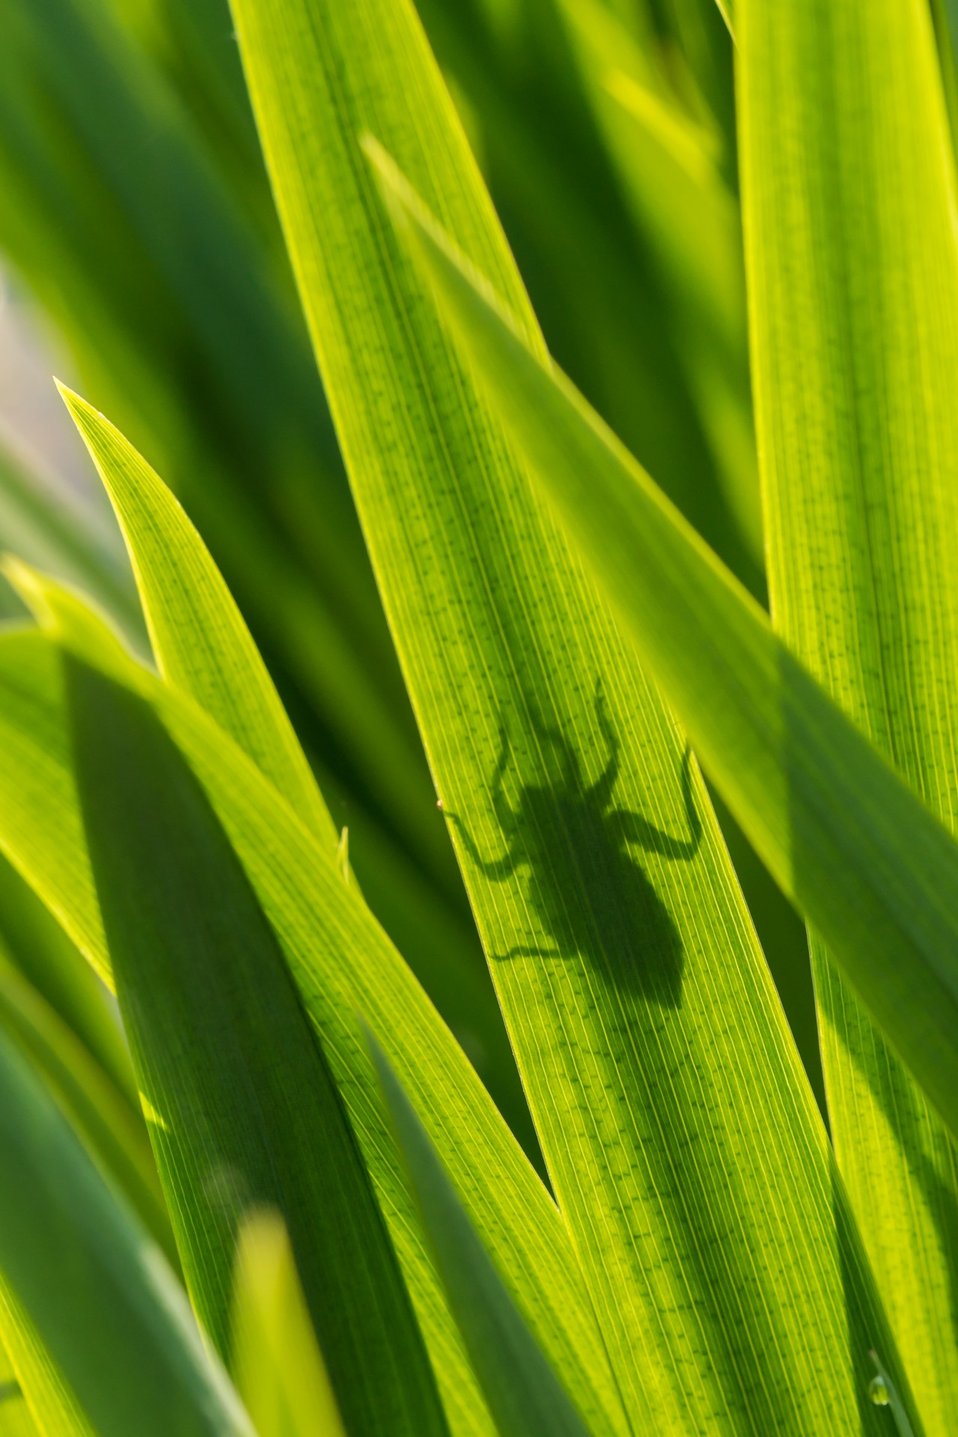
Silhouette bug on a leaf.